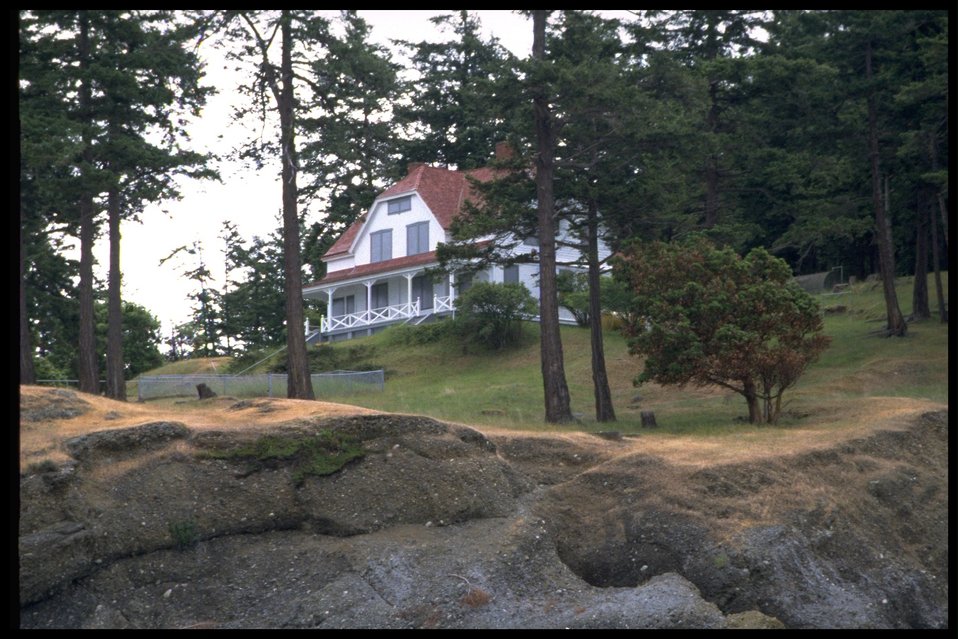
Turn Point from water with light station and buildings. Series of 17 photos.